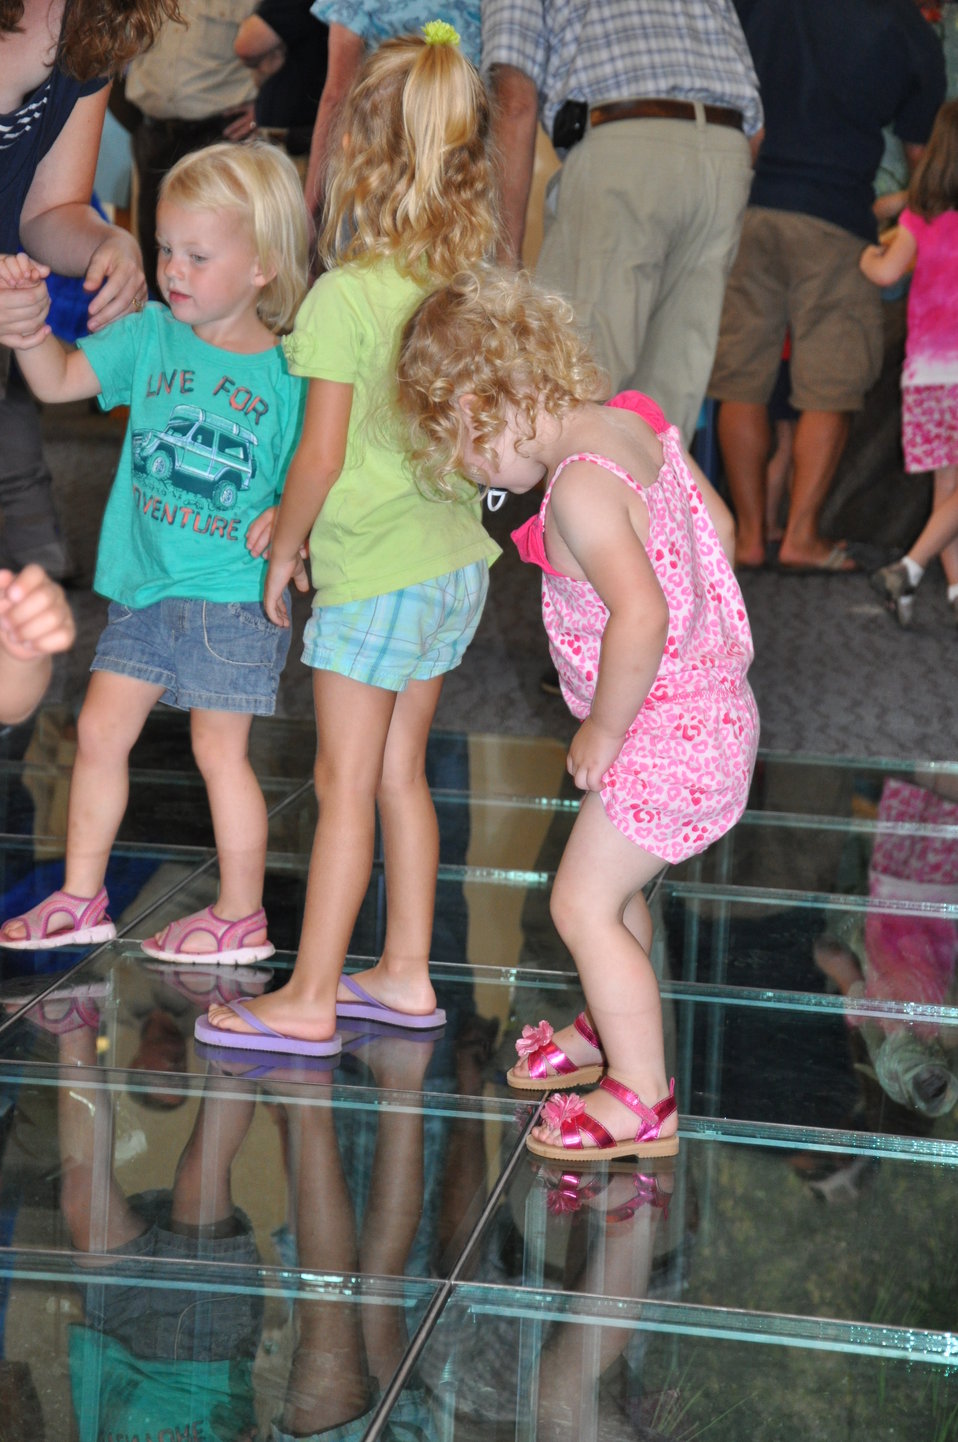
Looking at exhibit beneath glass floor